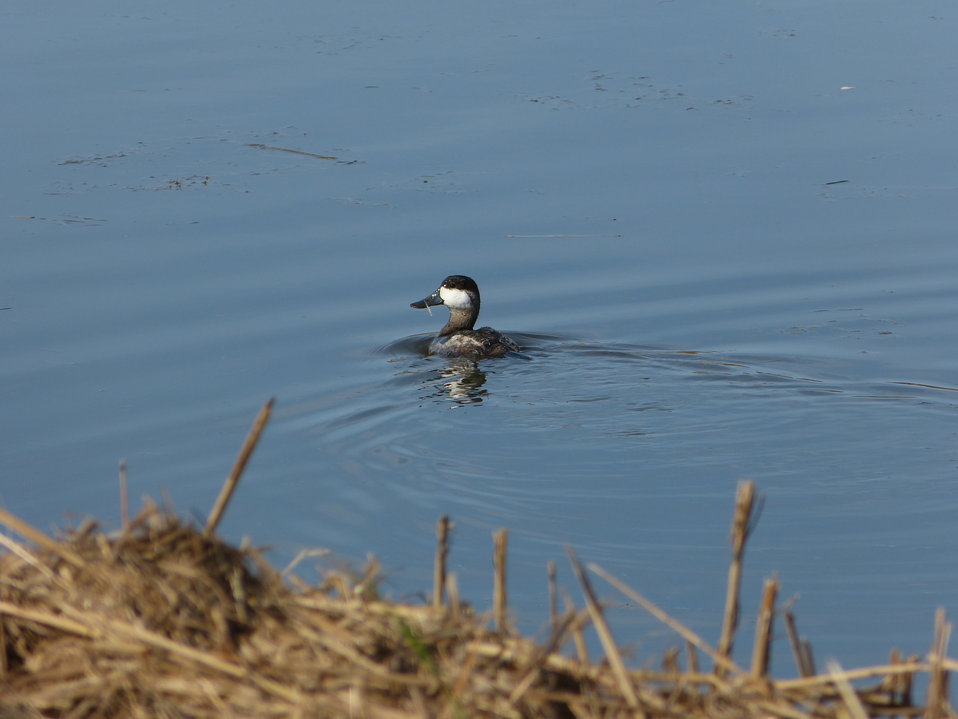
Ruddy duck

At Mattamuskeet National Wildlife Refuge in North Carolina. The Refuge’s prime location along the Atlantic Flyway makes it a vitally important stopover for wintering waterfowl.